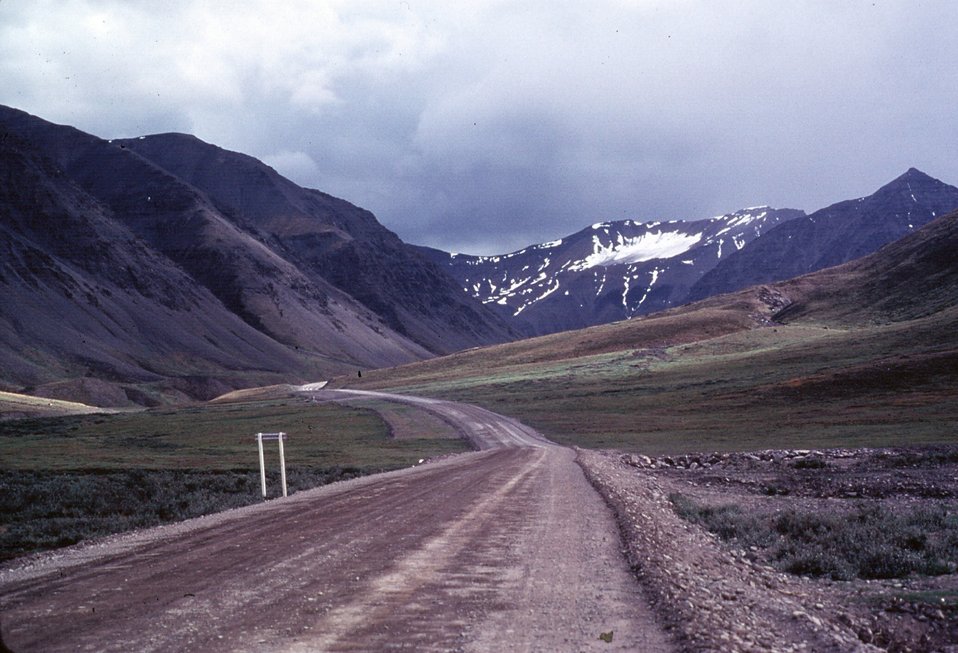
Dalton Highway, approaching Brooks Range